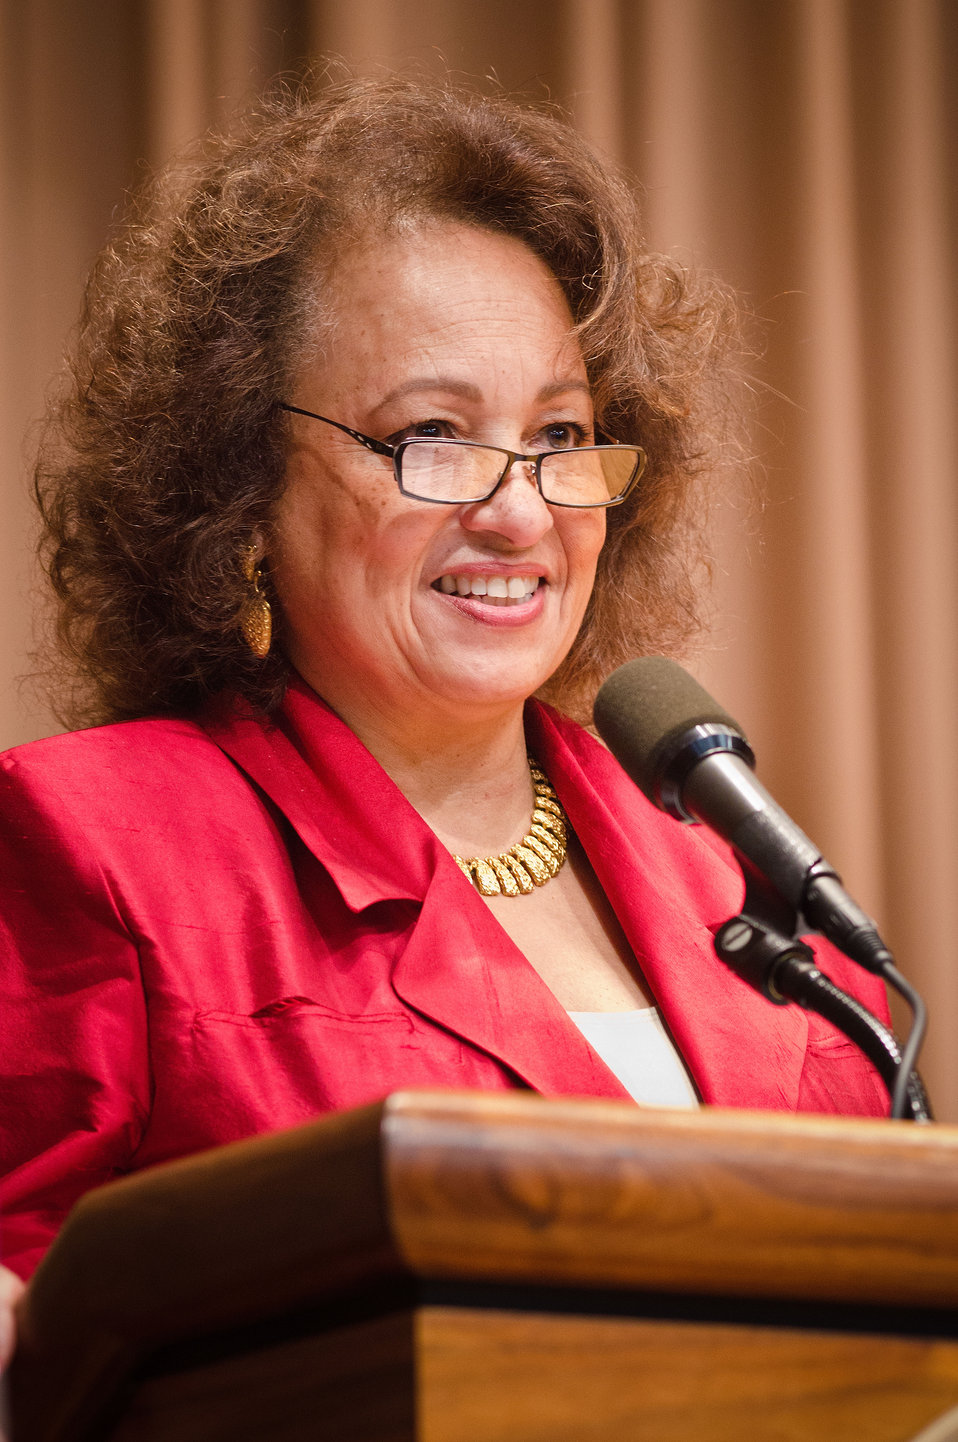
Daphne Maxwell Reid, Actress, Producer and Activist was the keynote speaker for the 2012 Women’s History Month Celebration, “Women’s Education – Women’s Empowerment” held at the United States Department of Agriculture on Thursday, March 8, 2012 in Washington, D.C.